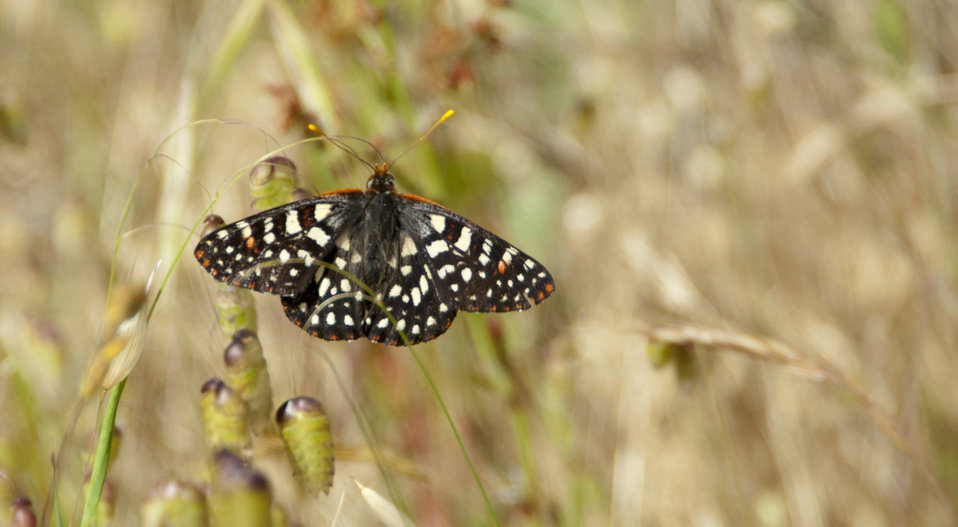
Chalcedon Checkerspot Butterfly 2

Photo Credit - Sarah Swenty/USFWS

Seen recently on San Bruno Mountian, the Variable Checkerspot or Chalcedon Checkerspot is a species of butterfly, common in western North America from Alaska to Baja California and from the Rocky Mountains to the Pacific Ocean.